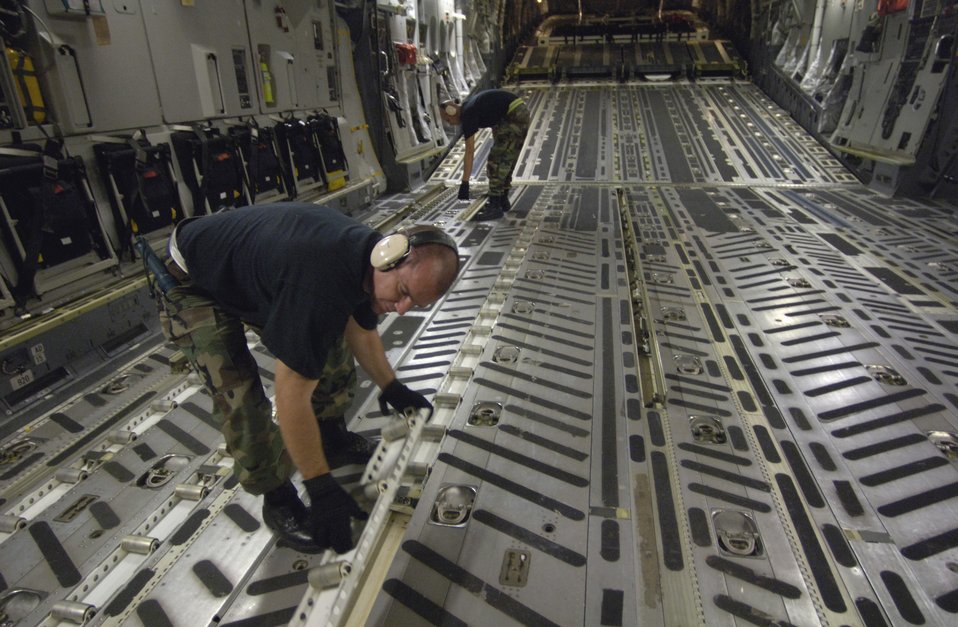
Philippine relief

HICKAM AIR FORCE BASE, Hawaii (AFPN) -- Tech. Sgt. Phillip Patterson and Staff Sgt. Nathan Rust prepare a C-17 Globemaster III to receive cargo pallets to support relief efforts in the Philippines. The composite C-17 squadron of active duty and Hawaii Air National Guard loaded the pallets Feb. 21 to carry military rations, water, cots, tents and personnel from the 15th Airlift Wing to help with the mudslide disaster. Sergeants Patterson and Rust are from the 735th Air Mobility Squadron at Hickam AFB, Hawaii.